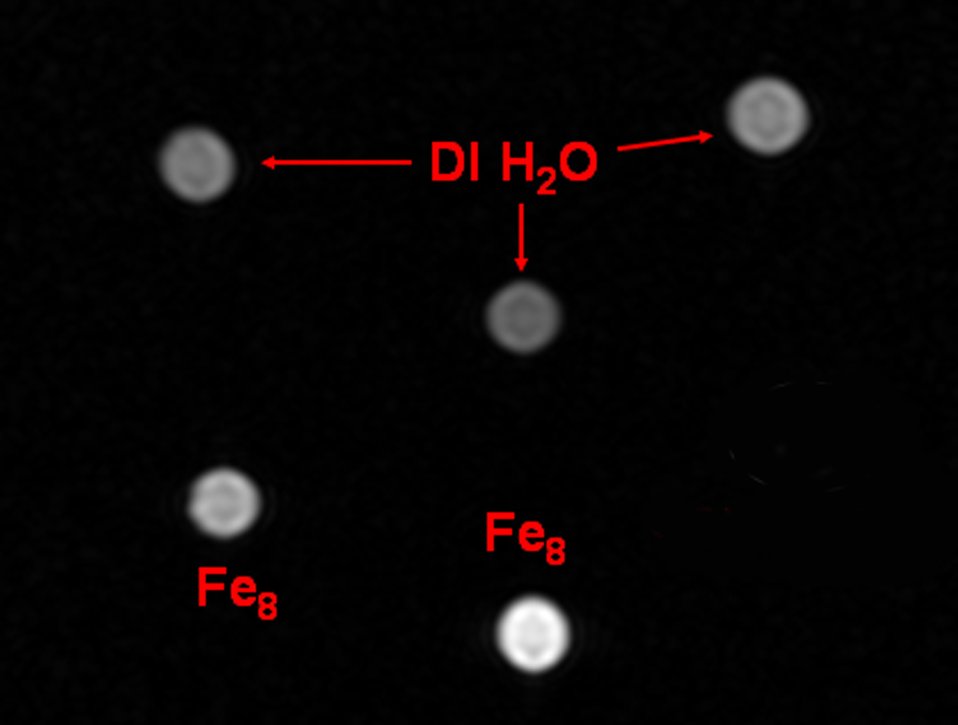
Using Nano-Magnets to Enhance Medical Imaging

NIST studies show that molecular nanomagnets create concentration-dependent contrast in magnetic resonance imaging (MRI). This test image shows what happens when nanomagnets are used to alter the nuclear properties of hydrogen in water, increasing brightness (bright spots below left and center) compared to deionized water (above).